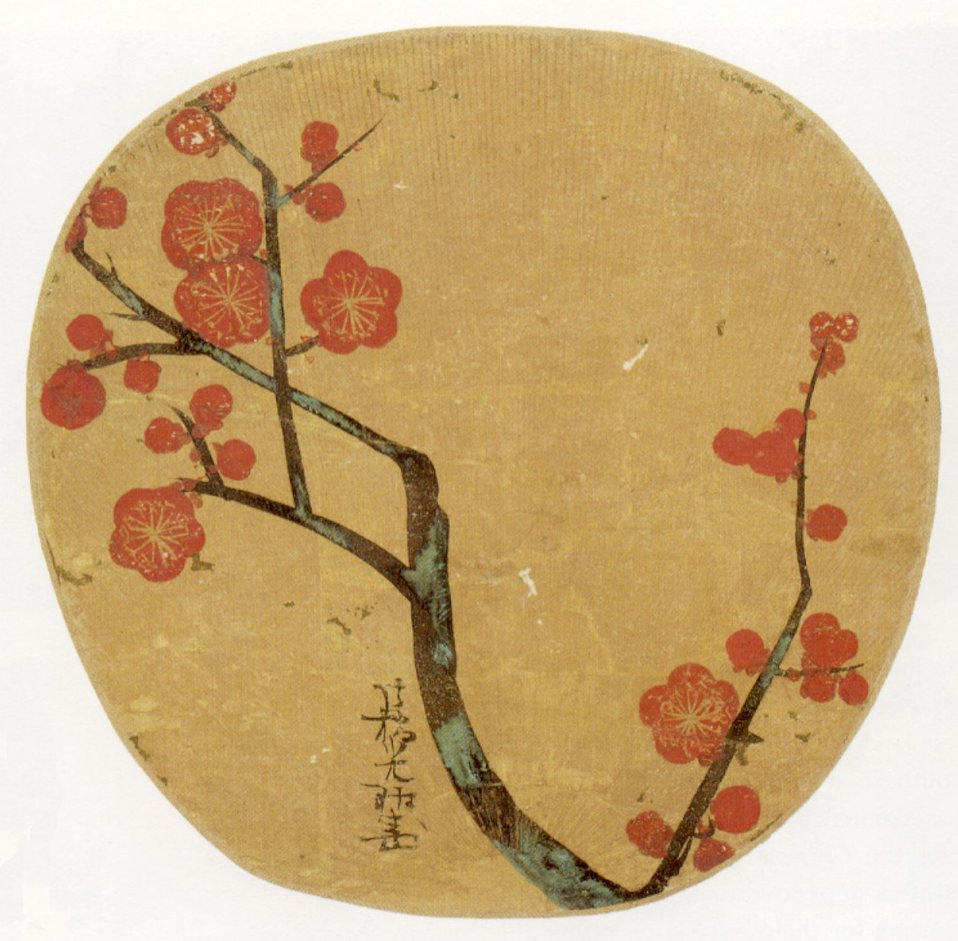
Plum Blossoms, ink and color on gold paper by Ogata Kōrin, Japanese fan, 1702,Honolulu Academy of Arts